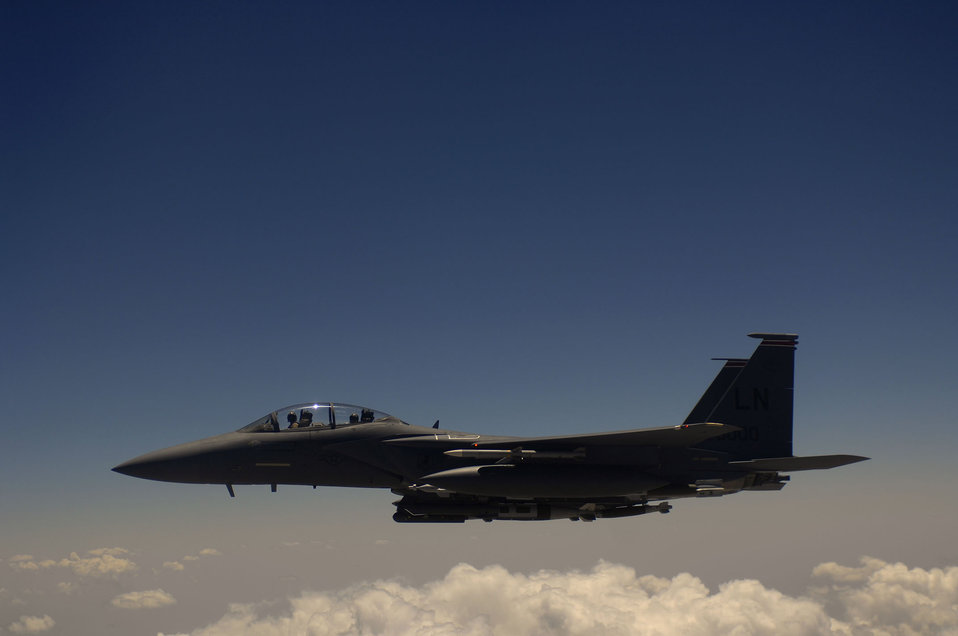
OEF

A U.S. Air Force F-15E Strike Eagle aircraft waits for his wingman after receiving fuel May 27, 2008 from a KC-135R Stratotanker during a mission over Afghanistan. The F-15E is deployed from Royal Air Force Lakenheath England and the KC-135R is assigned to the 22nd Expeditionary Air Refueling Squadron, 376th Air Expeditionary Wing and is deployed from the 174th Air Refueling Squadron, Iowa Air National Guard, Sioux City Iowa.